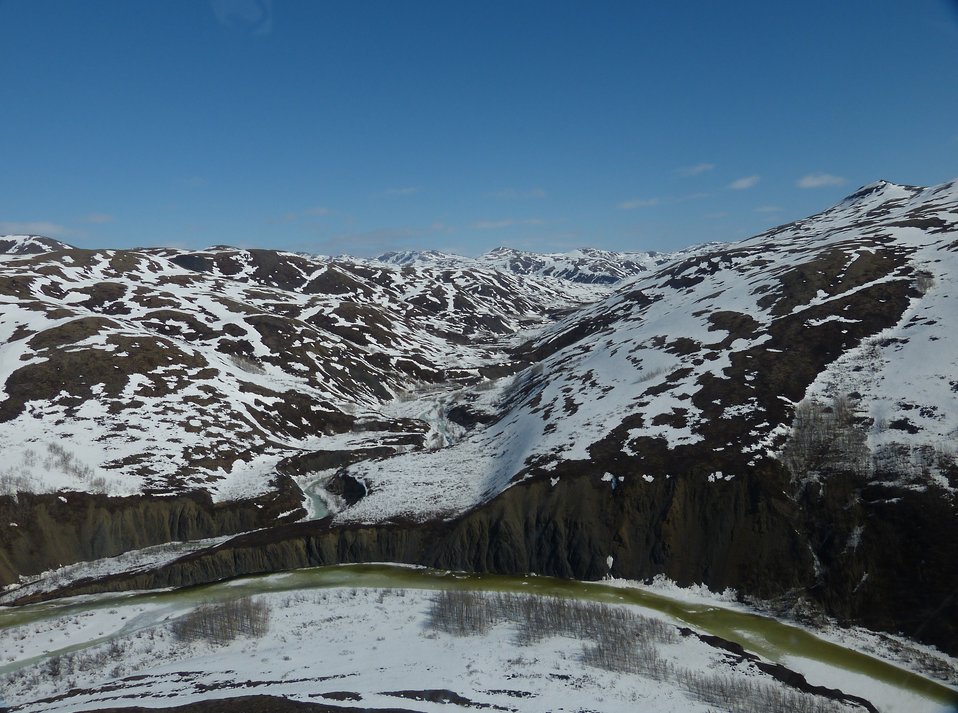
Kilbuck Mountains May2013 KSowl

Cliff-nesting raptor survey, Kilbuck Mountains, Yukon Delta National Wildlife Refuge

Photo credit: Kristine Sowl,
USFWS, YDNWR